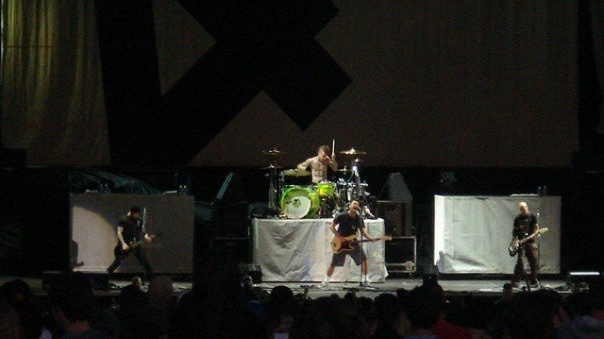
44 Perform Live